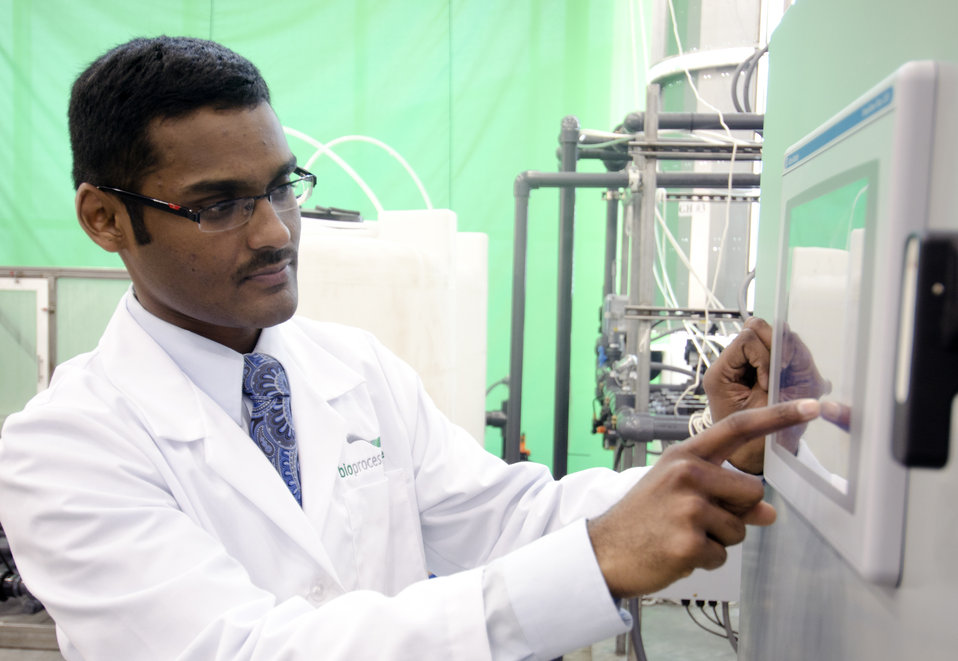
BioProcess Algae Field Engineer Thiruvenkadam Viswanathan at the BioProcess Algae facility of the Green Plains Renewable Energy (GPRE), Inc. (GPRE) demonstrates the touchscreen for automated controls on Friday, Apr. 15, 2011. This operation is co-located within GPRE’s ethanol factory where BioProcess Algae technology is used to treat waste products, carbon dioxide, recycled heat and water to mass-produce algae. Algae from this facility are used for animal feeds, pharmaceutical and beauty products.